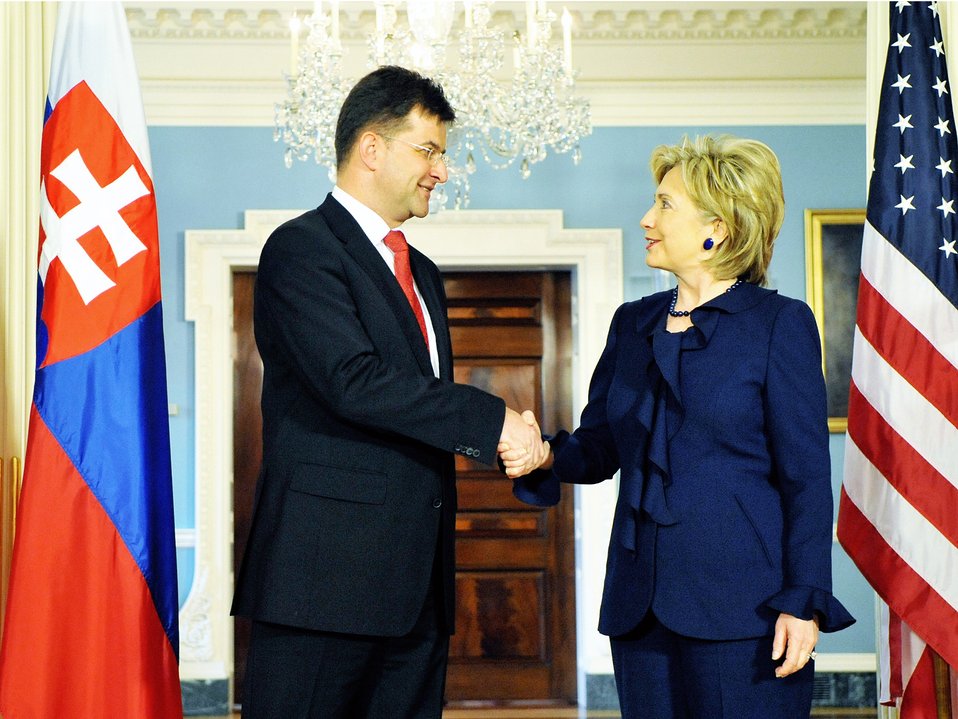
Secretary Clinton Meets With Slovak Foreign Minister

U.S. Secretary of State Hillary Rodham Clinton hosts a bilateral meeting with Slovak Foreign Minister Miroslav Lajcak in the Treaty Room of the U.S. Department of State in Washington, DC May 7, 2009.